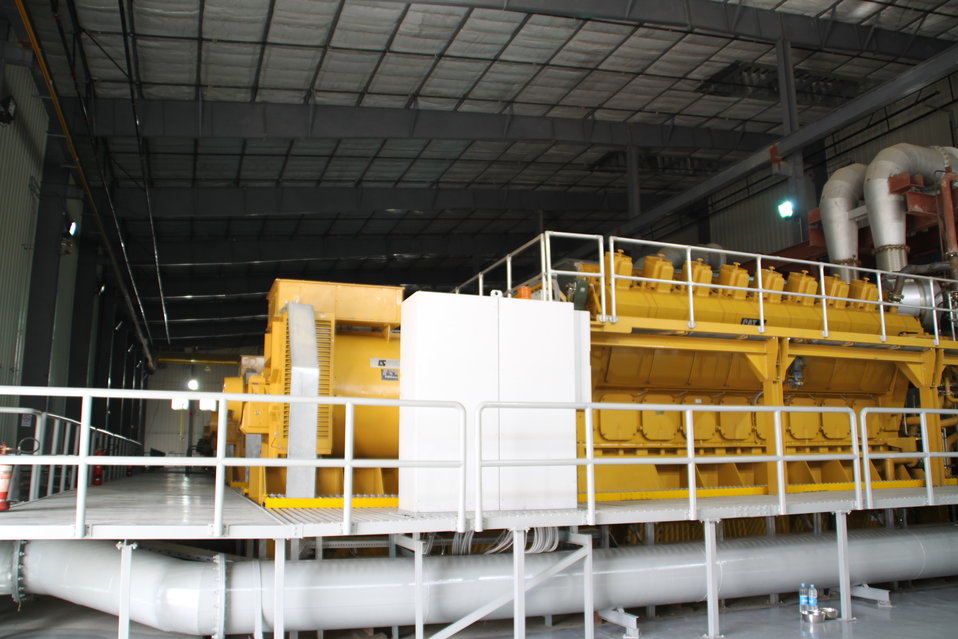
105 MW Tarakhil Power Plant Handover